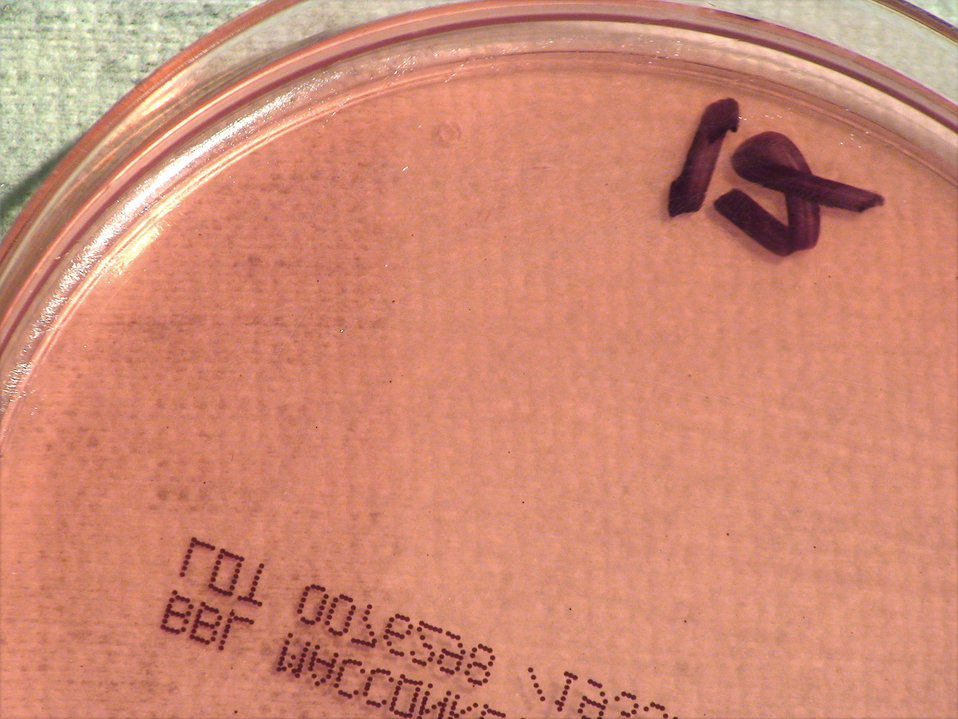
A closer view of PHIL 12390, this photograph depicts light colonial growth displayed by Gram-positive, Pasteur strain, Bacillus anthracis bacteria, which was grown on a medium of MacConkey agar, for a 24 hour time period, at a temperature of 37�C. B. anthrax is the bacterial pathogen, which causes the disease known as anthrax.